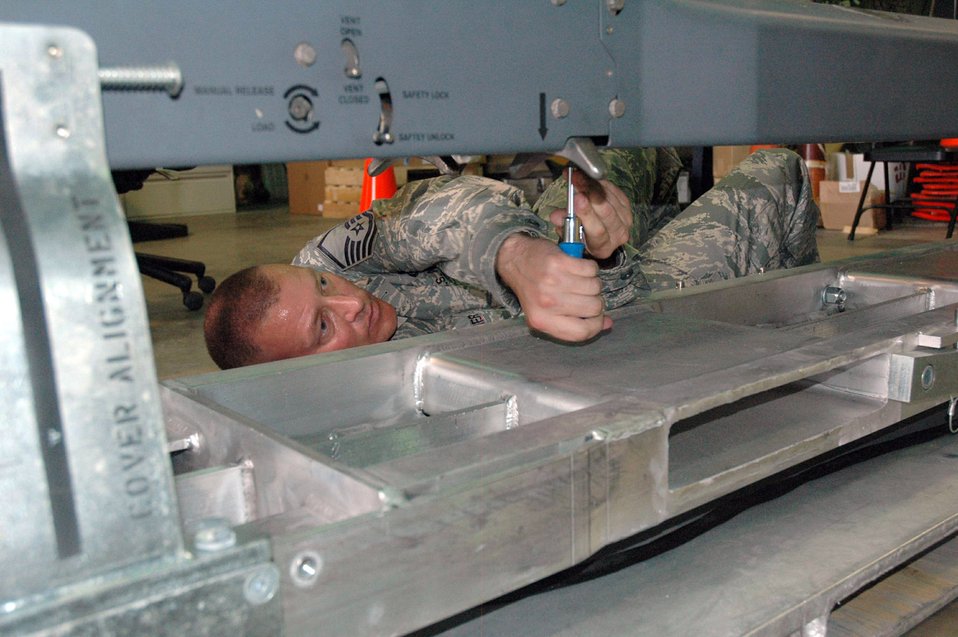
Eglin team prepares Small Diameter Bombs for warfighters

Master Sgt. Brian Mosier tightens the screws to hold a pneumatic carriage system that holds and discharges Small Diameter Bombs June 2 at Eglin Air Force Base, Fla. Sergeant Mosier is assigned to the 681st Armament Systems Squadron Small Diameter Bomb logistics team.